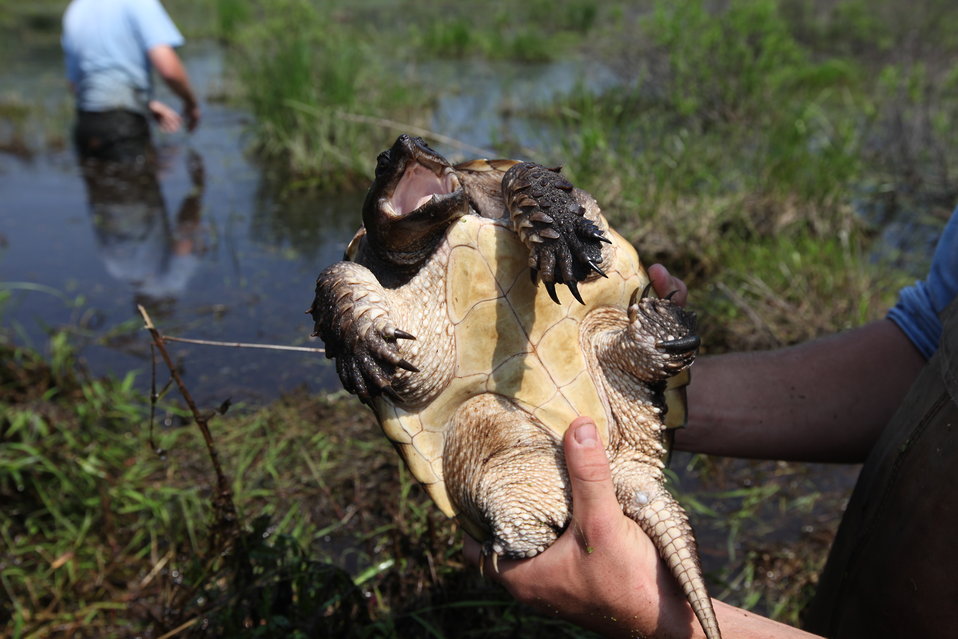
Snapping Turtle

Blanding's turtle release at Assabet River, MA.